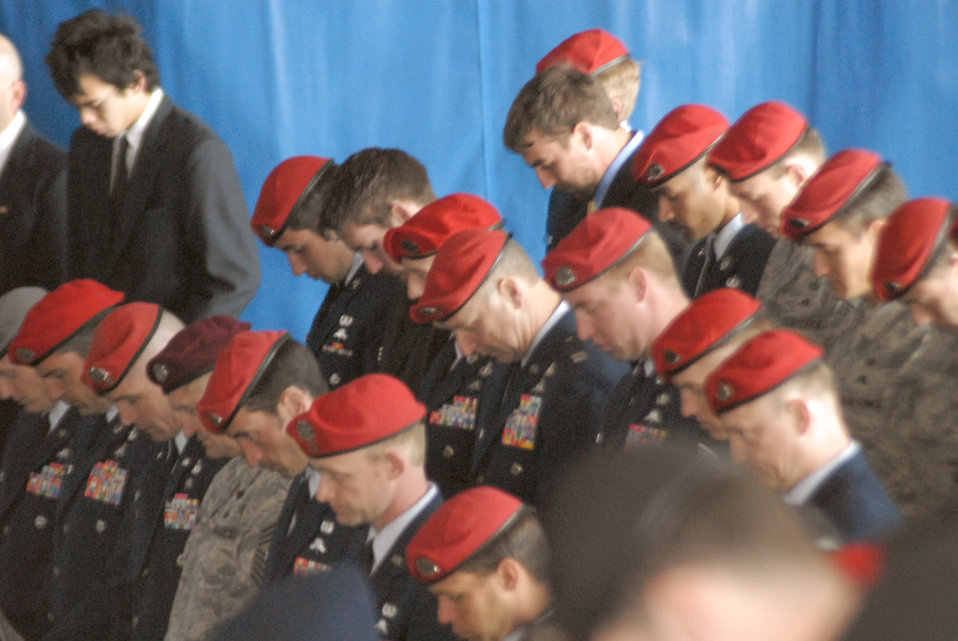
Pope officials remember fallen Airman

Mourners pay their respects during the memorial ceremony for Tech. Sgt. William Jefferson March 26 at Hangar 4 at Pope Air Force Base, N.C. Sergeant Jefferson died in support of Operation Enduring Freedom March 22. Sergeant Jefferson was assigned to the 21st Special Tactics Squadron.